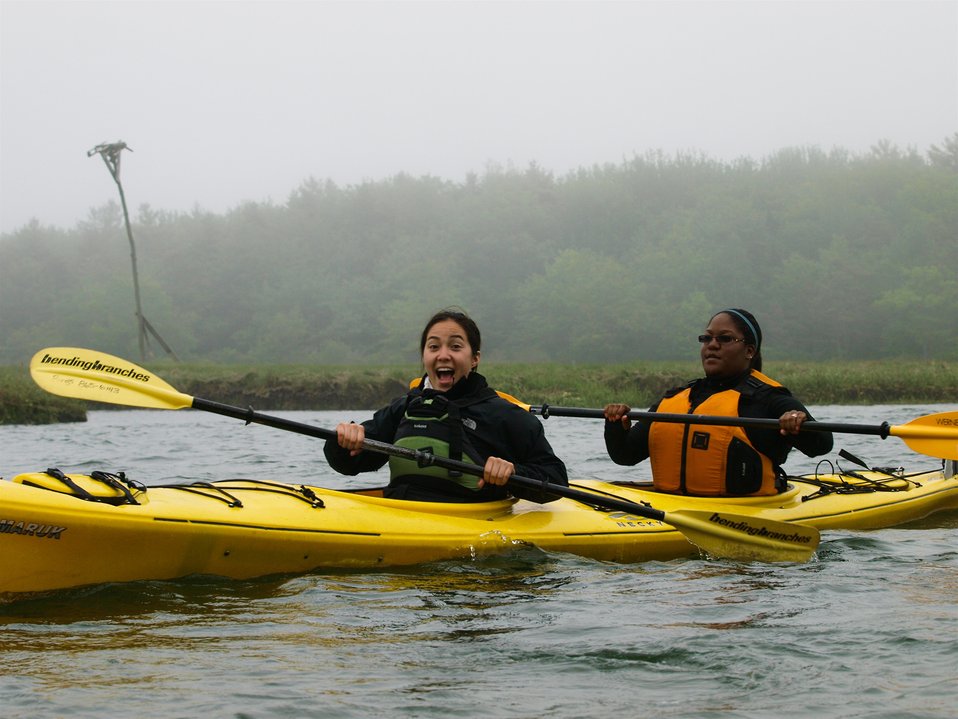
Kayak Trip